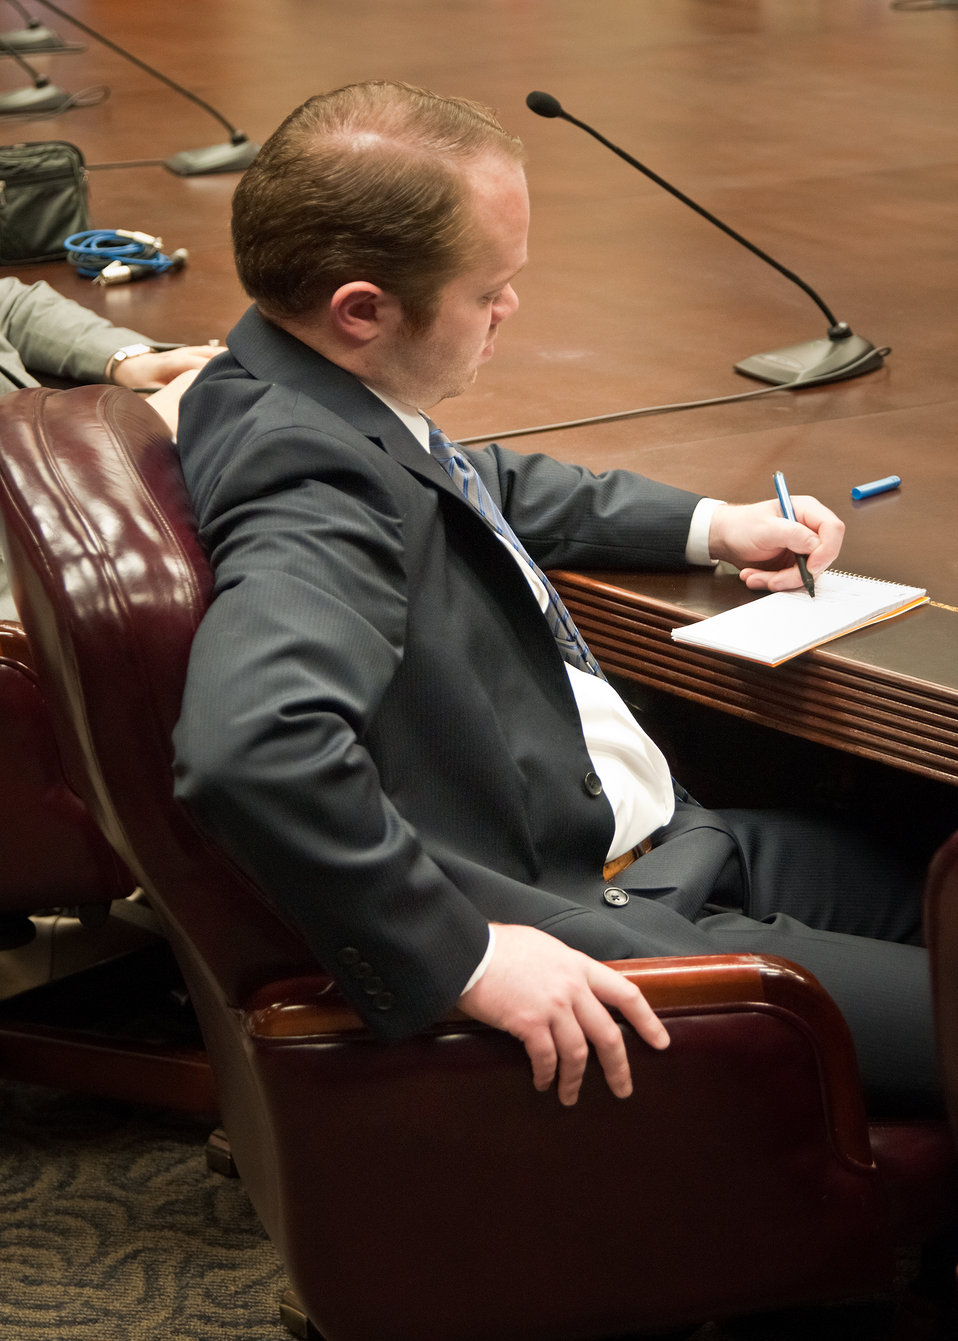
Chase Adams, KBHB Radio, Sturgis, South Dakota takes notes for his broadcast immediately after a session with Agriculture Secretary Tom Vilsack at the United States Department of Agriculture during the annual National Association of Farm Broadcasters visit to Washington, DC, on Tuesday, May 5, 2011.